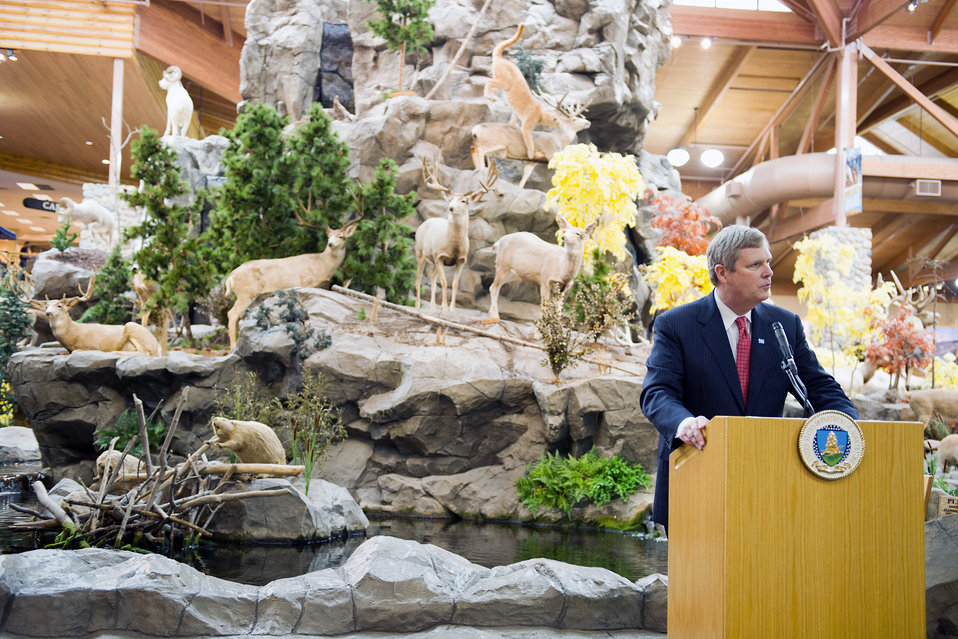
Agriculture Secretary Tom Vilsack highlighted the U.S. Department of Agriculture's conservation work at a Cabela's store in Dundee, MI, on March 16, 2012 .